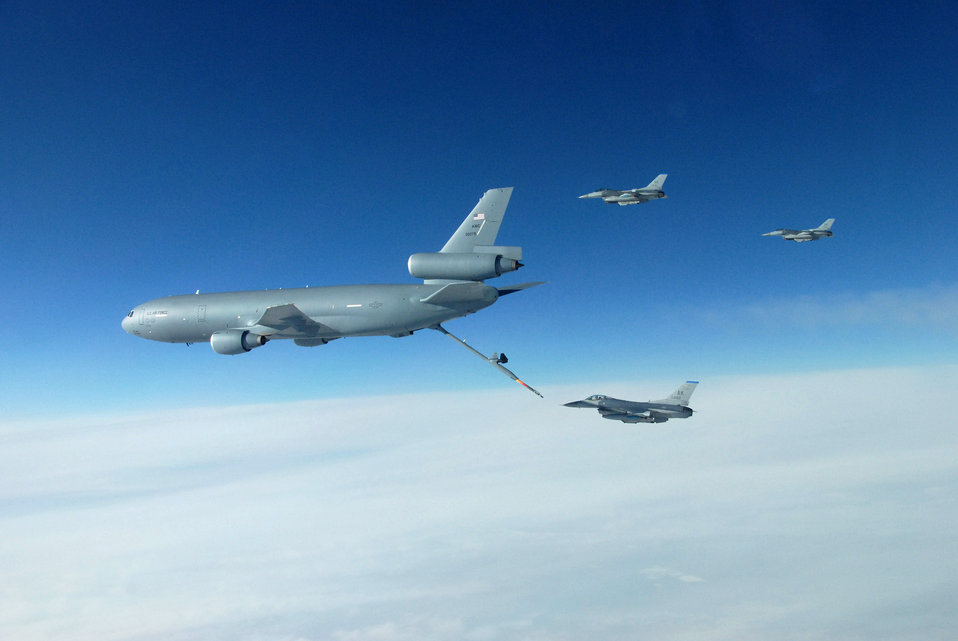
Eielson pilots get aggressive aircraft during Red Flag-Alaska

Three F-16 Fighting Falcons refuel behind a KC-10 Extender over the Pacific Alaska Range Complex April 13 during Red Flag-Alaska 07-1. Red Flag-Alaska is a Pacific Air Forces-directed field training exercise flown under simulated air combat conditions.